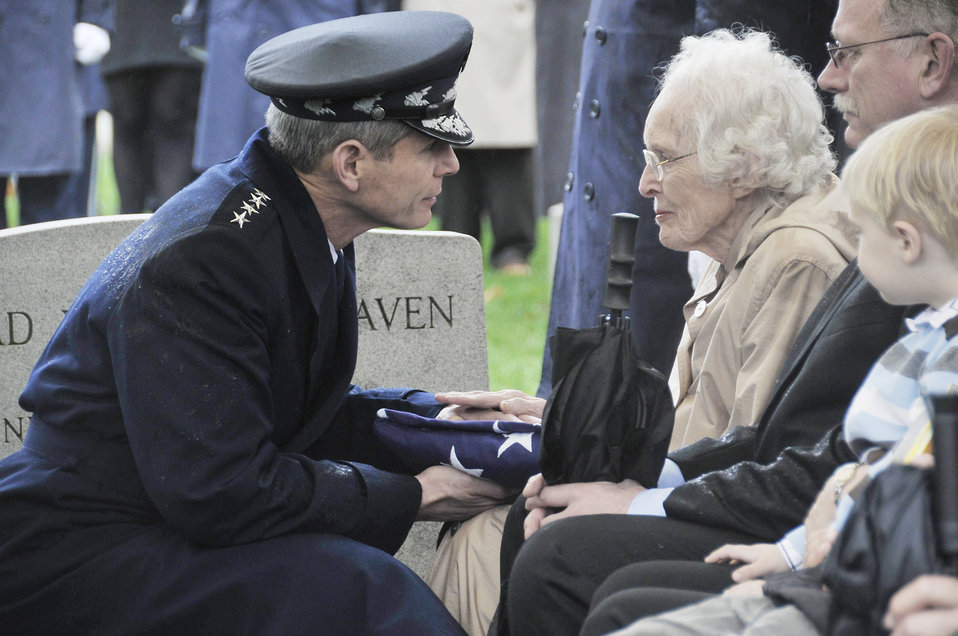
Gen. Lew Allen, former CSAF, funeral

Gen. Norton Schwartz, chief of staff of the Air Force, presents a folded flag to Barbara Allen, wife of Gen. Lew Allen Jr. General Allen served as chief of staff from July 1978 to July 1982. The memorial service was held March 22 at the Fort Meyer (Va.) Memorial Chapel. He was laid to rest at Arlington National Cemetery.